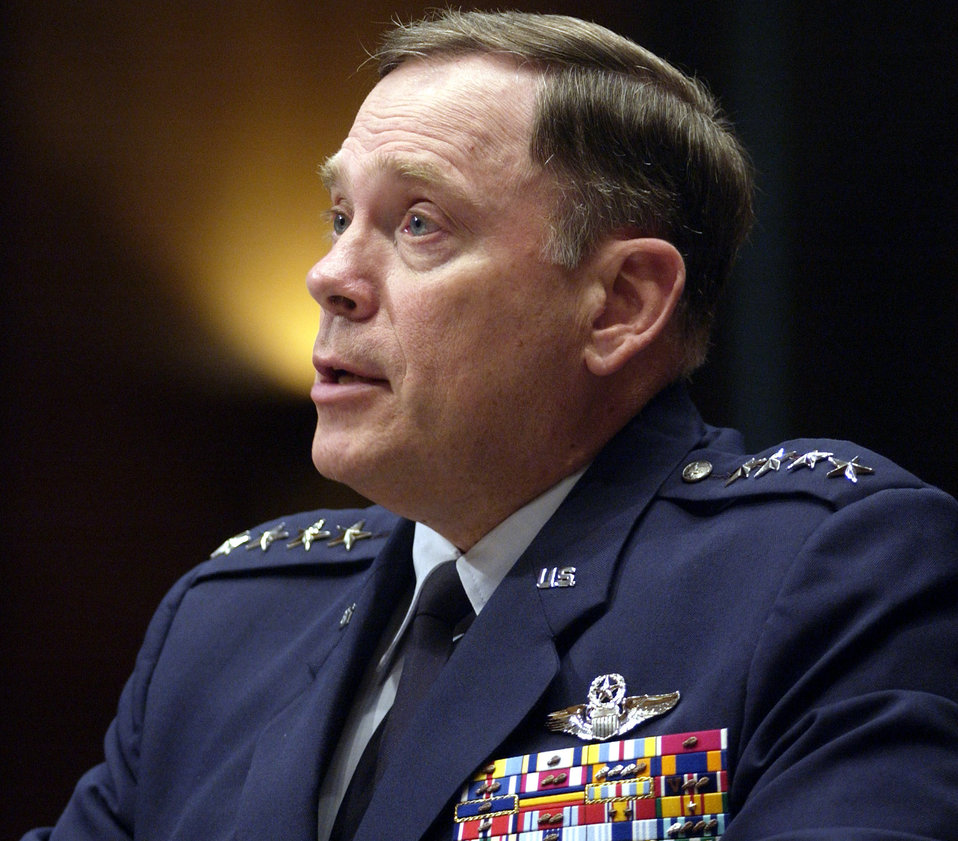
CSAF briefs Senate on service's outlook for 2004

WASHINGTON -- Air Force Chief of Staff Gen. John P. Jumper joined the other service chiefs Feb. 25 to give the Senate Armed Services Committee his view of how fiscal 2004 is shaping up.